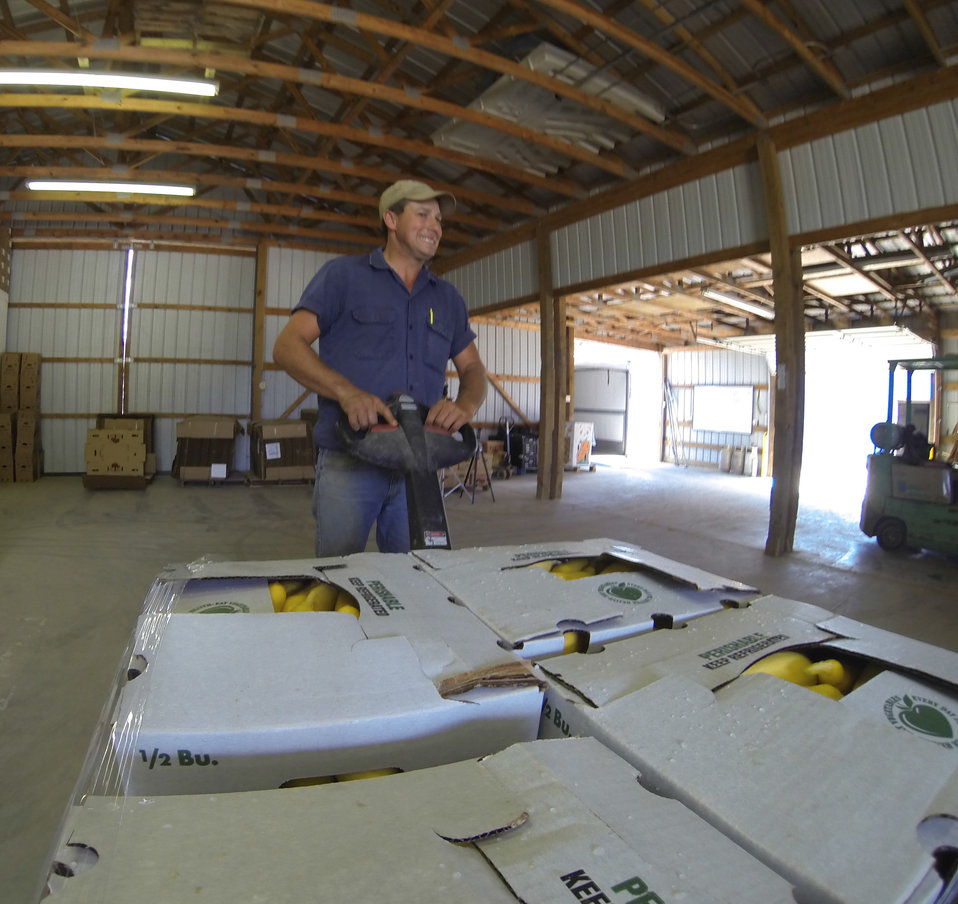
Kevin Kirby maneuvers a pallet of fresh picked squash onto a waiting tractor-trailer rig for shipment to a wholesaler, during the harvest process at Kirby Farms in Mechanicsville, VA on Friday, Sept. 20, 2013. Kirby Farms devotes 200 acres of the farm to eggplant, spinach, beets, tomato, jalapeno peppers, melons and a variety of greens. Soybeans and small grain are grown on the remaining 300 acres. The fertile Virginia soil and their management practices, allows Kirby Farms to double and triple crop fields with rotational crop selection. Wholesalers, who buy from this farm, sell the produce to major supermarkets in the Mid-Atlantic region, from North Carolina to Maryland. Restaurants in the local area prepare and serve their harvest to patrons in the Greater Richmond, VA Region.